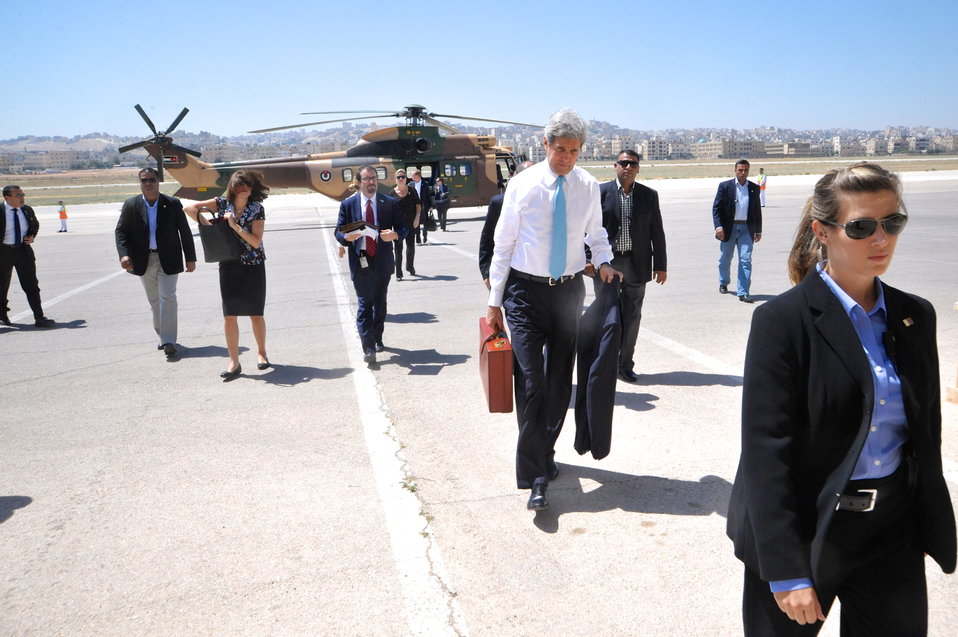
Secretary Kerry Arrives in Jordan

U.S. Secretary of State John Kerry walks away from a Royal Jordanian Air Force helicopter after a flight from Jerusalem to Amman, Jordan, on June 29, 2013.